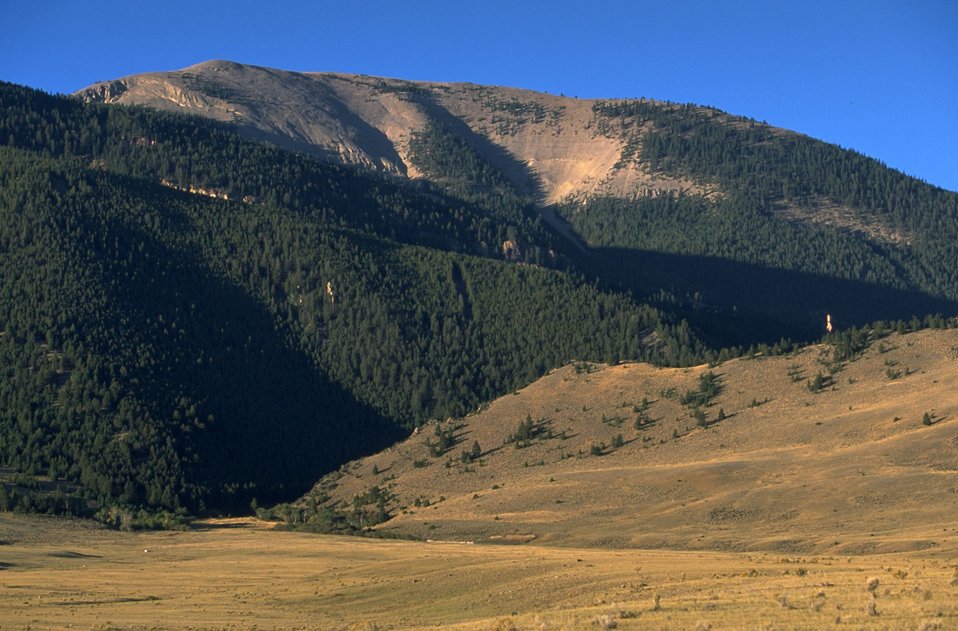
Grassy slope leading to mountain